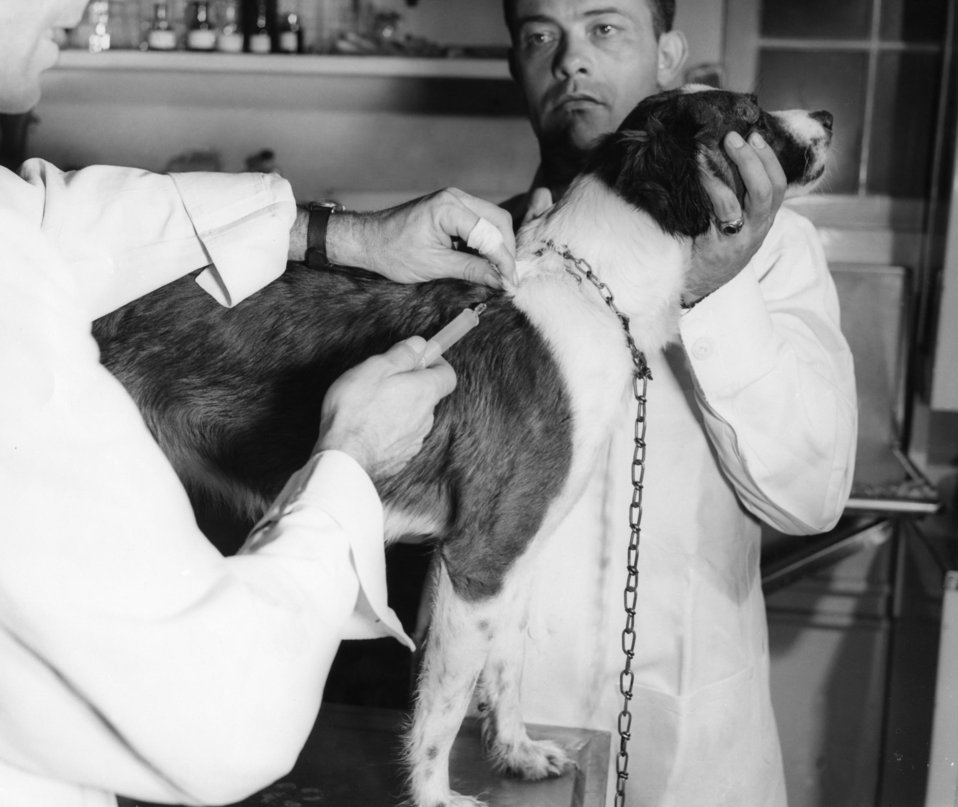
Here, two Centers for Disease Control (CDC) veterinarians were shown administering a rabies vaccination to a dog in an Atlanta, Georgia veterinarian clinic.